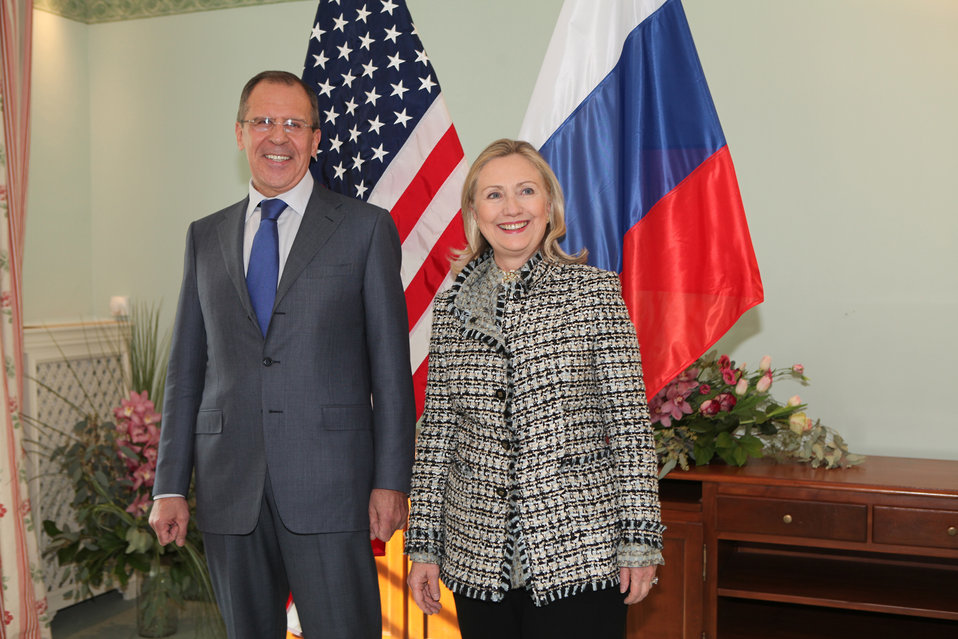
Secretary Clinton Meets With Russian Foreign Minister Lavrov

U.S. Secretary of State Hillary Rodham Clinton meets with Russian Foreign Minister Sergey Lavrov in Munich, Germany, on February 4, 2012.